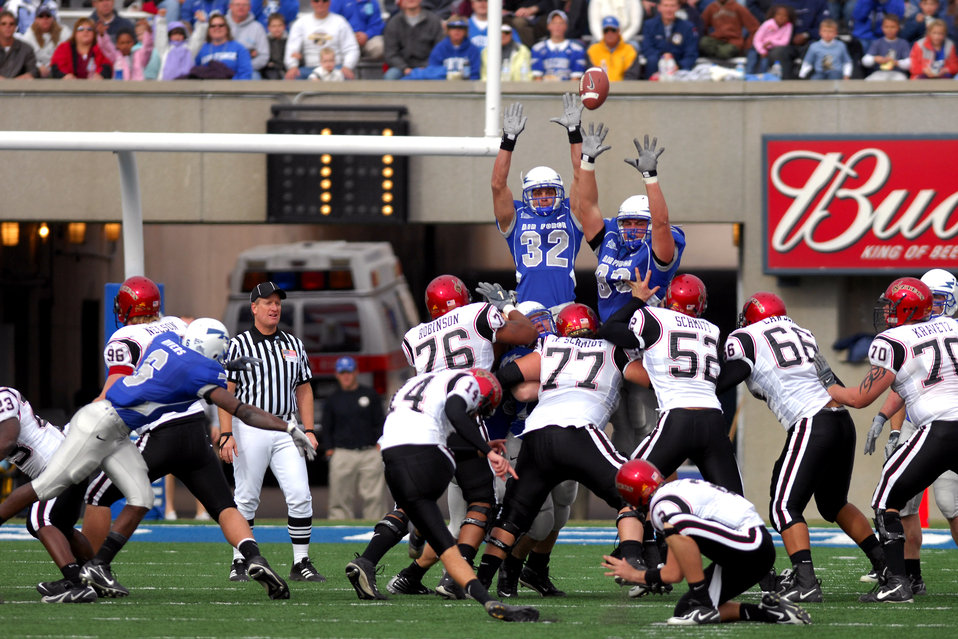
Football: Bowl-bound Falcons dominate regular season finale

Falcon special team players Hunter Altman, 32, and Michael Krogh, 82, try to block a field goal attempt by San Diego State kicker Garrett Palmer, 14, during Air Force's 55-23 win over the Aztecs Nov. 17 at the Academy's Falcon Stadium.